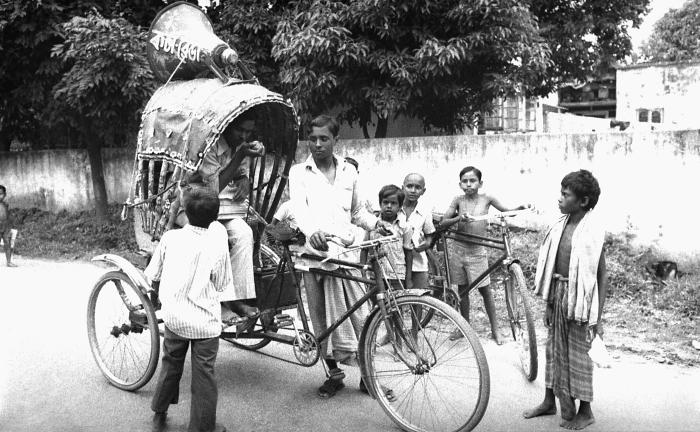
This 1975 photograph depicted two local Bangladesh smallpox eradication team volunteers as they were getting the word out throughout a village community by riding about on a rickshaw, atop which was mounted a megaphone horn. The message included information about the reward paid for reporting a confirmed smallpox case, which was 250 Taka. The Taka is the official currency of Bangladesh, and is produced in 8 different denominations. The last known case of naturally occurring smallpox, a young girl named Rahima Banu, was reported by an 8 year old girl named Bilkisunnessa, who was paid her 250 Taka reward. All rewards were handed out in a public place.